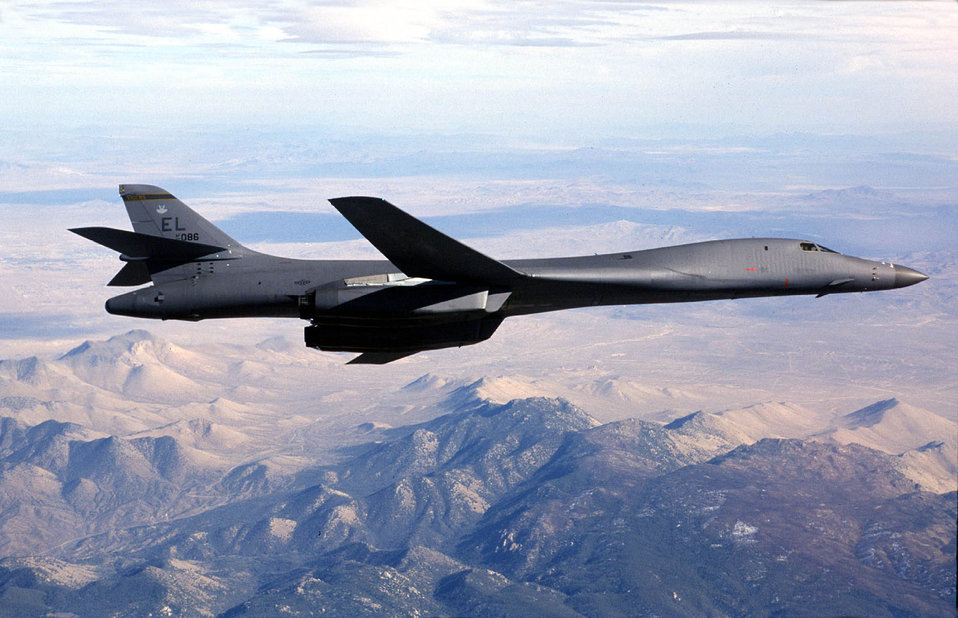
Sunny California

OVER SOUTHERN CALIFORNIA -- A B-1B Lancer flies a test mission. The B-1B is a long-range strategic bomber, capable of flying intercontinental missions without refueling, then penetrating present and future sophisticated enemy defenses. It can perform a variety of missions, including that of a conventional weapons carrier for theater operations.